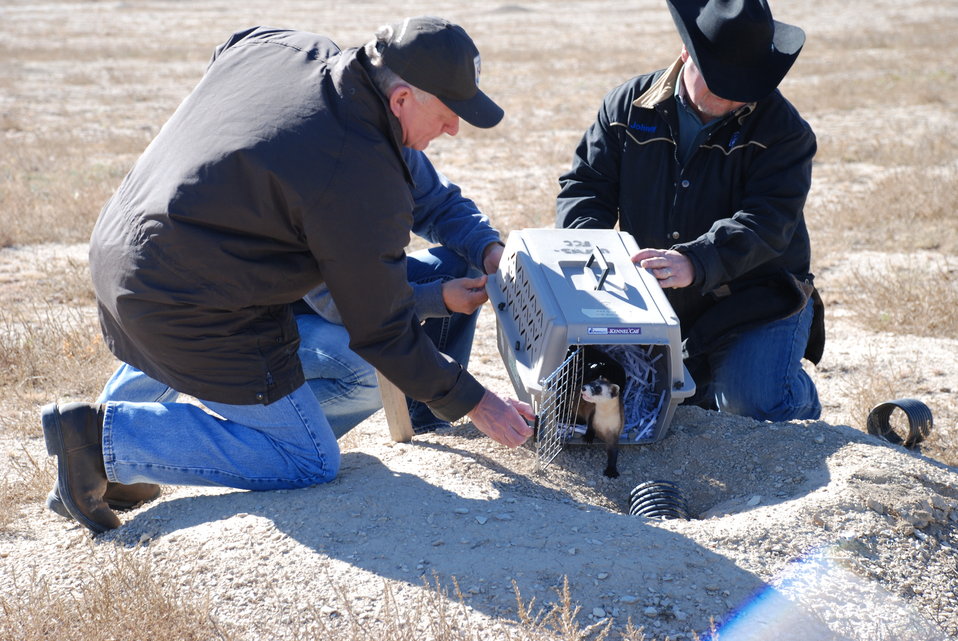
Black-footed Ferret Release

On Wednesday, October 30, 2013, thirty endangered black-footed ferrets were released onto cattle rancher Gary Walker's land, west of Pueblo, Colorado.

The release launched a potentially new way of preserving endangered species and was accomplished by way of a Safe Harbor Agreement (SHA). This SHA provides opportunities for private and Tribal landowners to volunteer their lands for reintroductions of this endangered species without affecting their land-use activities beyond mutually agreed-upon measures. It also extends these assurances to surrounding non-participating lands and other landowner interests. This SHA will be an important step in promoting the recovery of this iconic species.